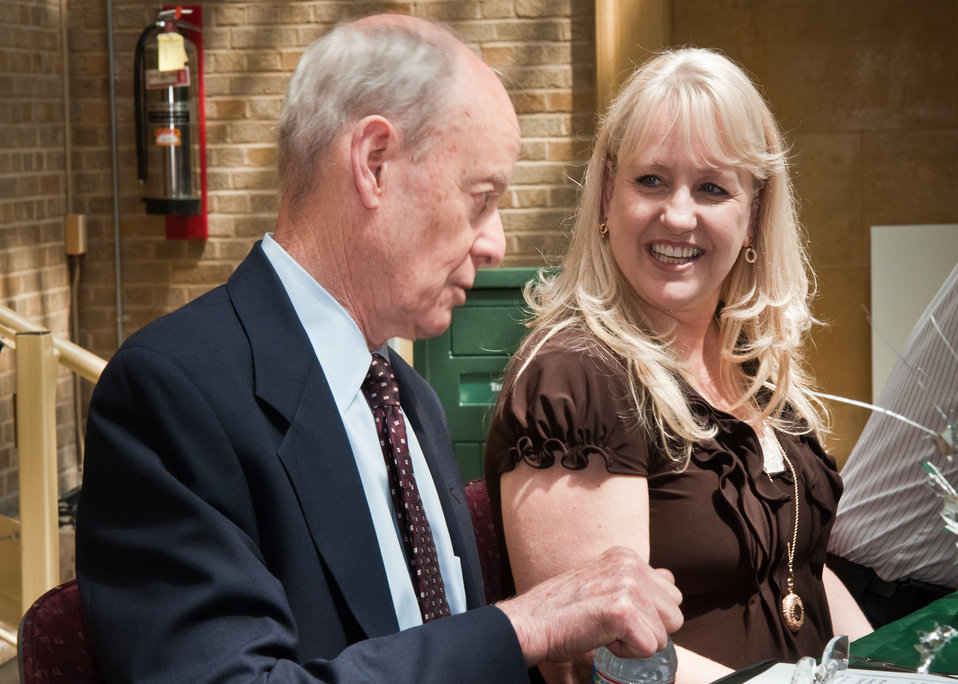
Panel members Morris Tate (left), Director for Business Services, Office of Operations and Debra Arnold (right), Rural Development and President, AFSCME Union Local 3870 (USDA) discuss mutual benefits of the telework agreement for employees during a “Telework Program Party/Brown Bag” event on the patio of the Jamie Whitten Building of United States Department of Agriculture, in Washington, DC, on Tuesday, June 7, 2011. The event included an interactive telework panel and exhibits from the field of telework, telecommuting and mobile work environments. The event was open to all USDA employees, supervisors, managers, human resources staff and USDA telework program coordinators.